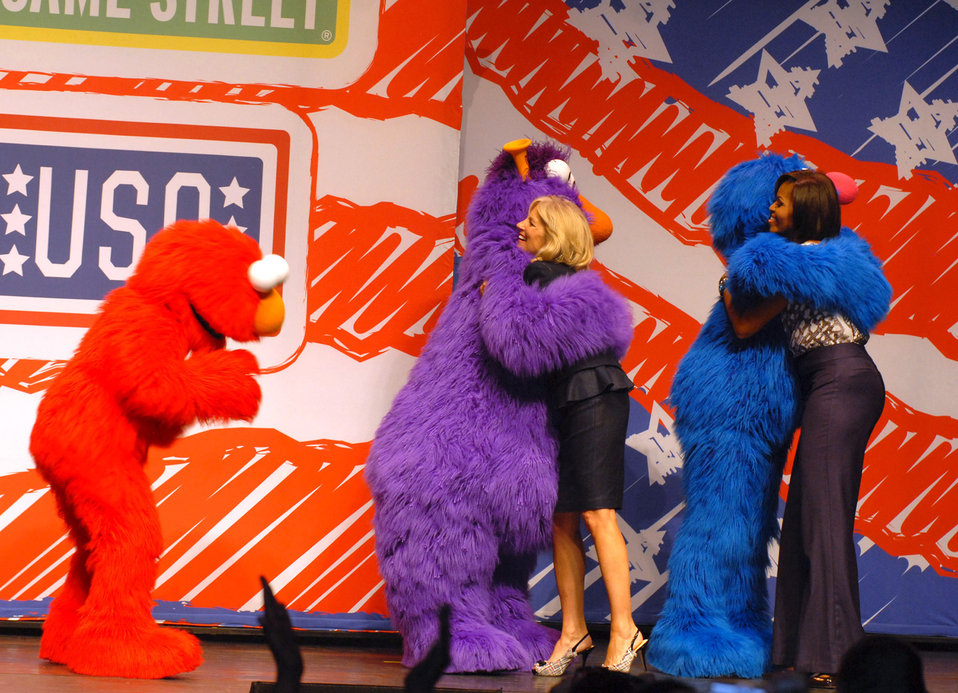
Sesame, USO tour

First lady Michelle Obama and Dr. Jill Biden greet Sesame Street Muppets Telly and Grover while Elmo waits for his hug during a